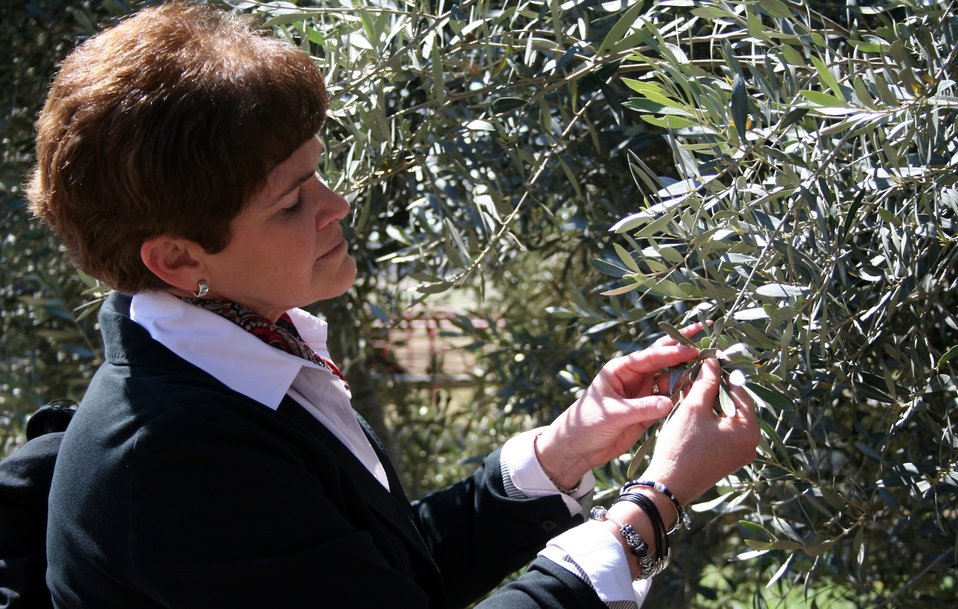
Agriculture Deputy Secretary Krysta Harden inspects olive blossoms during her visit to the Sandy Oaks Olive Orchard in Elmendorf, TX on Friday, Feb. 28, 2014.